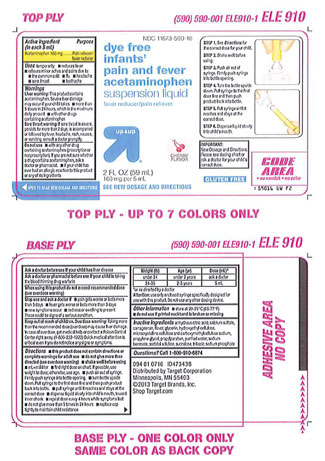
Recalled - Acetaminophen infant suspension liquid

November 1, 2013 – Product Recall – Perrigo Initiates Nationwide Voluntary Product Recall of Acetaminophen Infant Suspension Liquid, 160 Mg/5 Ml, Due to a Potential Defect with the Co-packaged Oral Syringe.